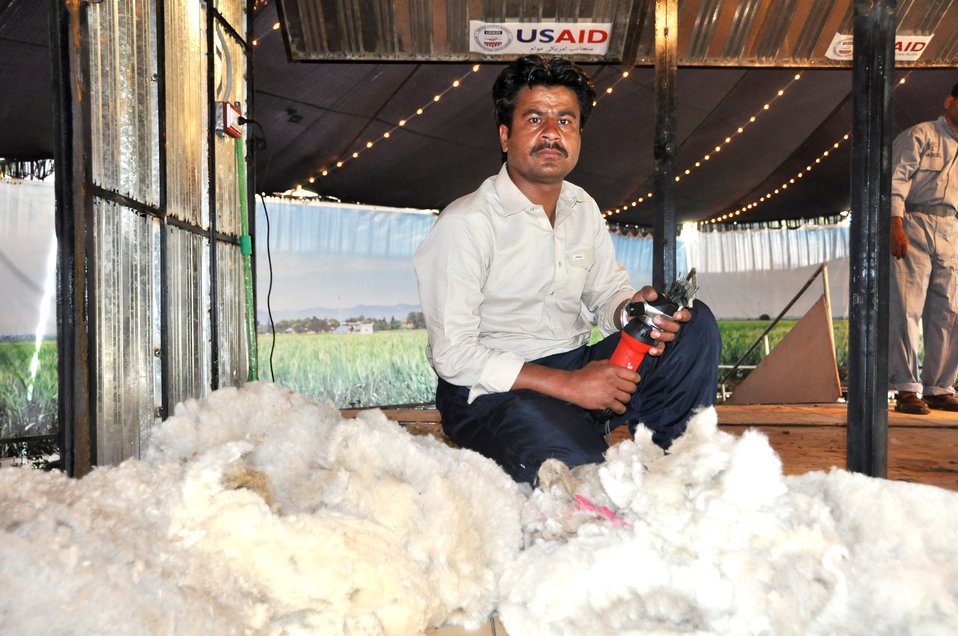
Abdul Khaliq proudly holding his electric shears